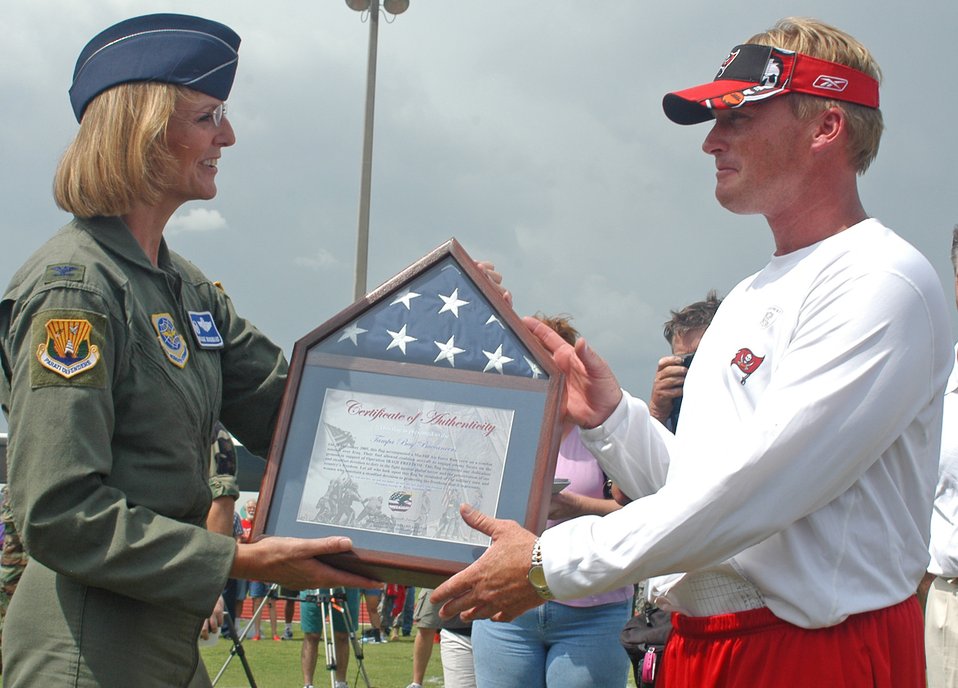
Tampa Bay plays at MacDill

Col. Maggie Woodward, 6th Air Mobility Wing commander, presents a framed flag to Jon Gruden, Tampa Bay Buccaneers head coach, after the pre-game, walkthrough practice held at MacDill Air Force Base, Fla., on Aug. 18. The practice was closed to the general public but open to base personnel. Airmen who attended the practice were able to get an up-close look at the 2006 Buccaneers team.